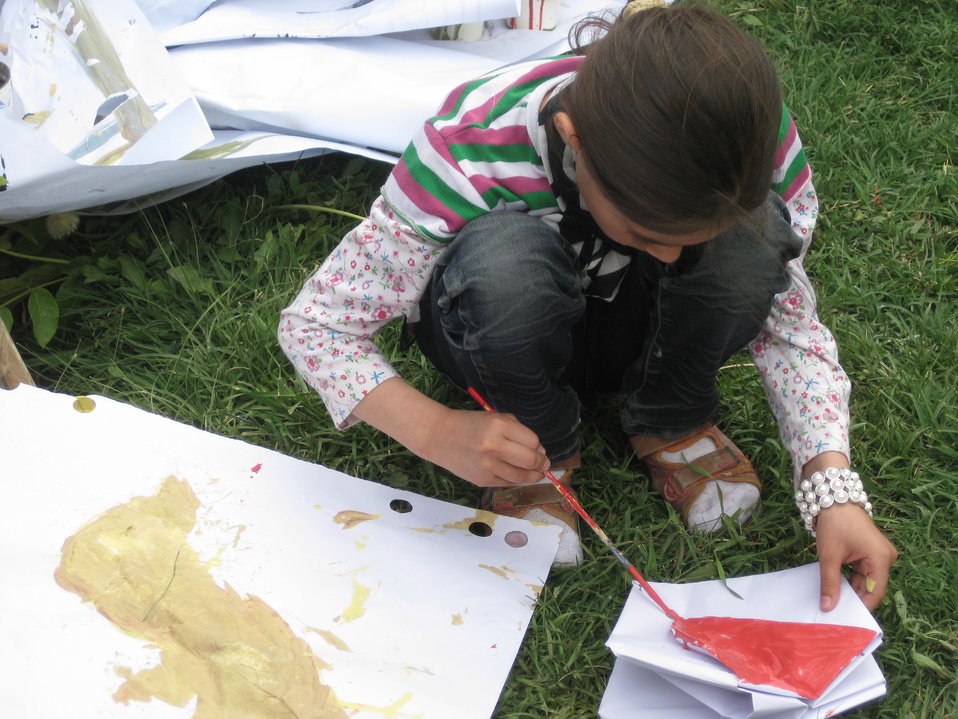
Afghan Youth Voices 088